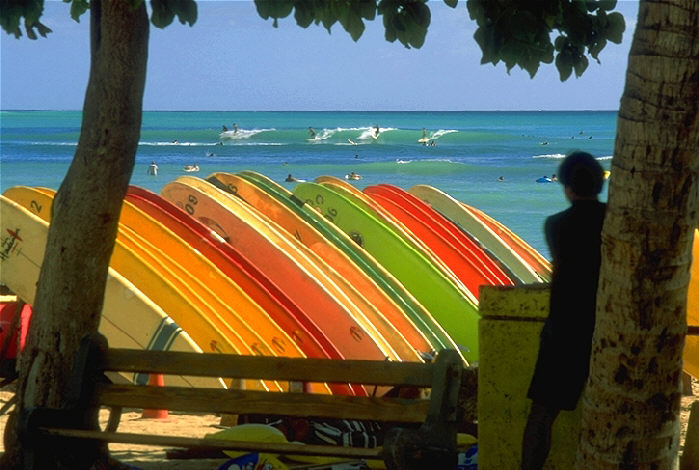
Surfboards and surfers. Waikiki Beach, Honolulu, Hawaii.